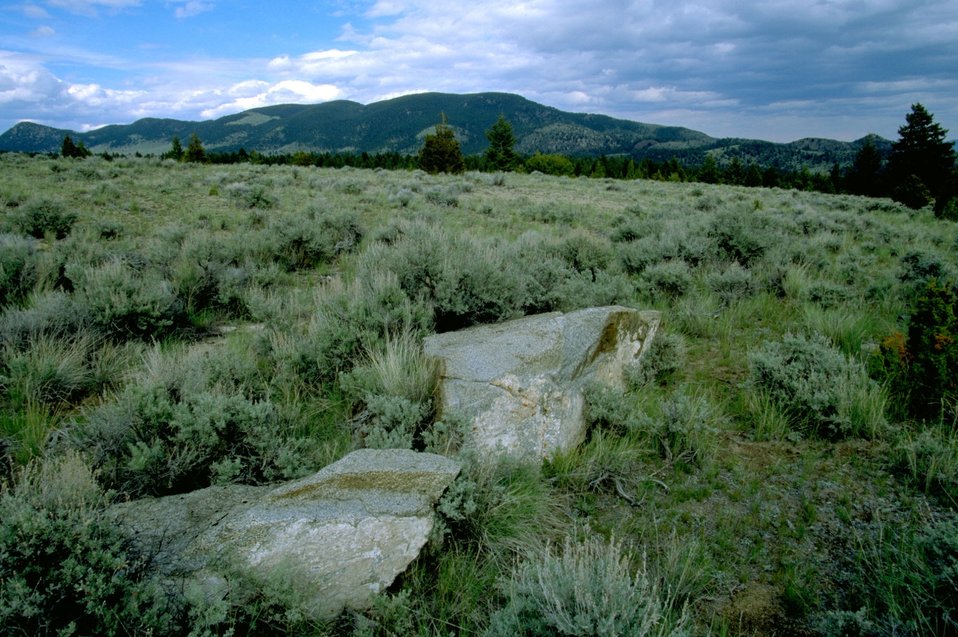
Sagebrush and grass with large rocks in the foreground